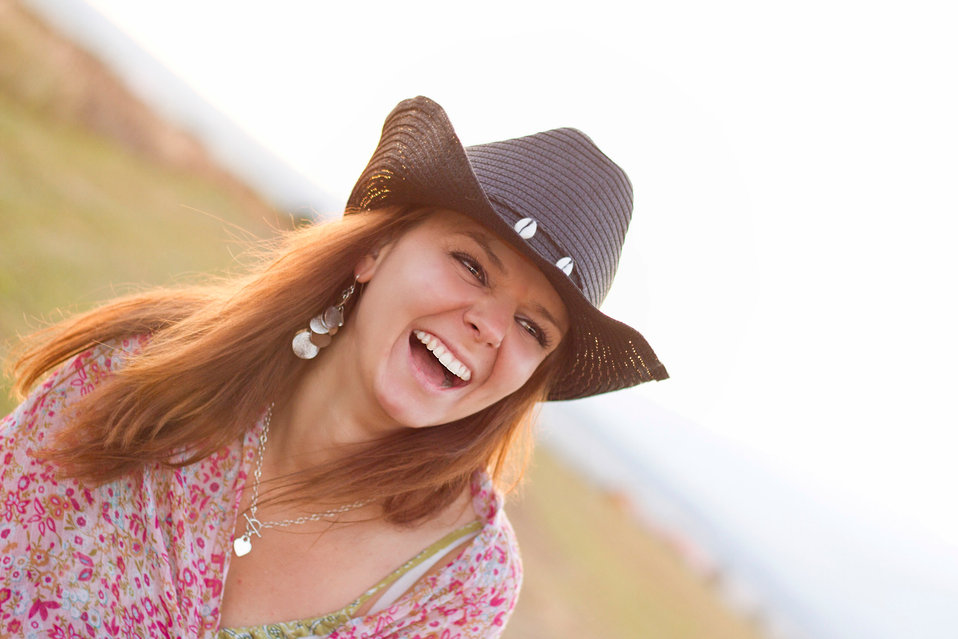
Young girl smiling.